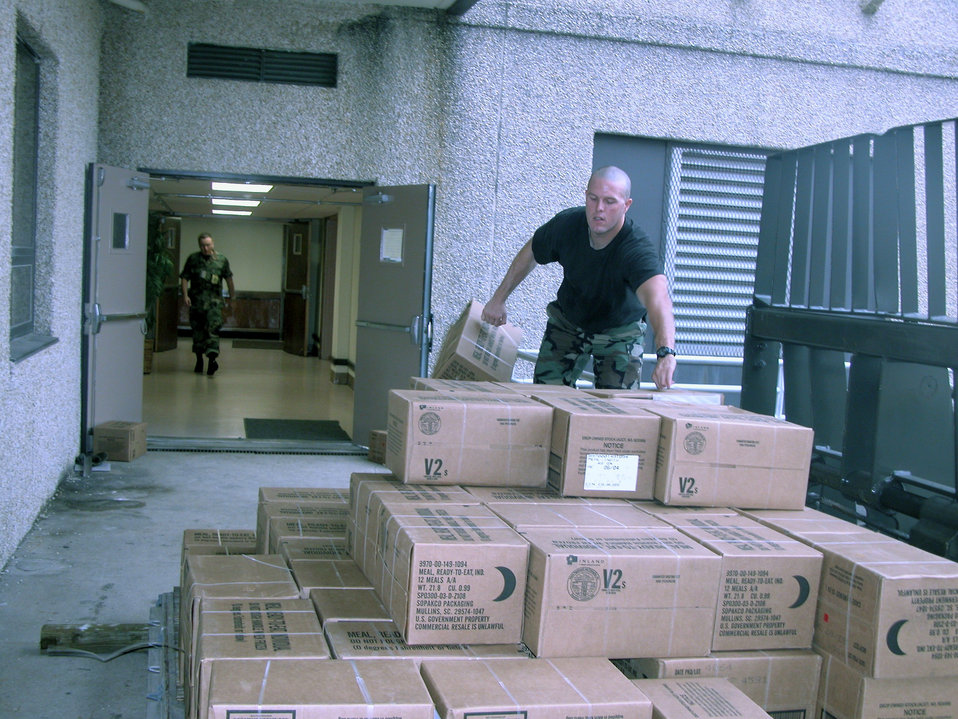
Base people, aircraft move from Hurricane Ivan's path

EGLIN AIR FORCE BASE, Fla. -- Airmen from the 96th Services Squadron stock the shelter in the base headquarters building here with packaged meals. Forecasters predict Hurricane Ivan will hit the base early Sept. 16.